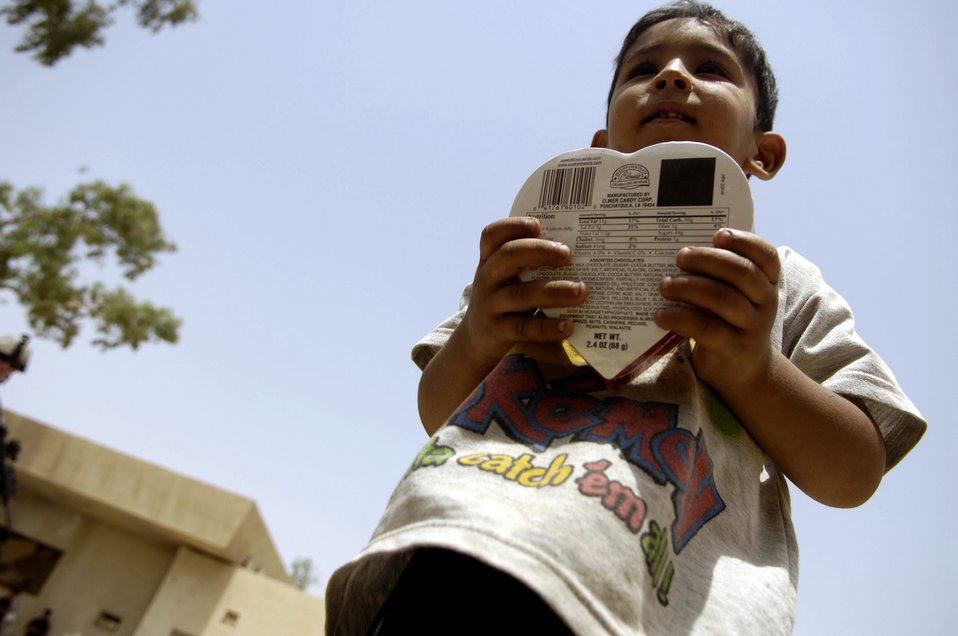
Gifts for the tender hearts

An Iraqi child in the village of Al Furat clutches a box of chocolates he received as a gift May 24. During this humanitarian mission, U.S. servicemembers worked with the Iraqi police to distribute school supplies, toys and treats to Iraqi children.